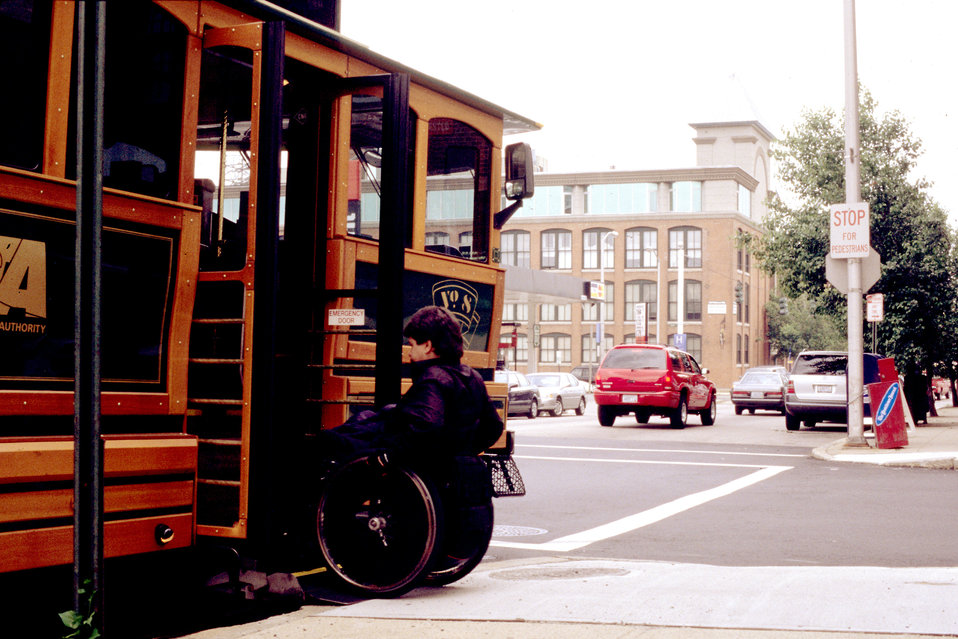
The wheelchair-seated man in this photograph was in the process of boarding an antique-style, faux trolley city bus, by using a lift mechanism built into the central portion of the vehicle. Because a special mechanical lift was required, the means of access was not universal. However, the inclusion of this device meant that many more people could take advantage of the public transit offered by this city, which justified the consideration that was paid during the design process governing the manufacturing of such publicly-accessible mass transit vehicles.